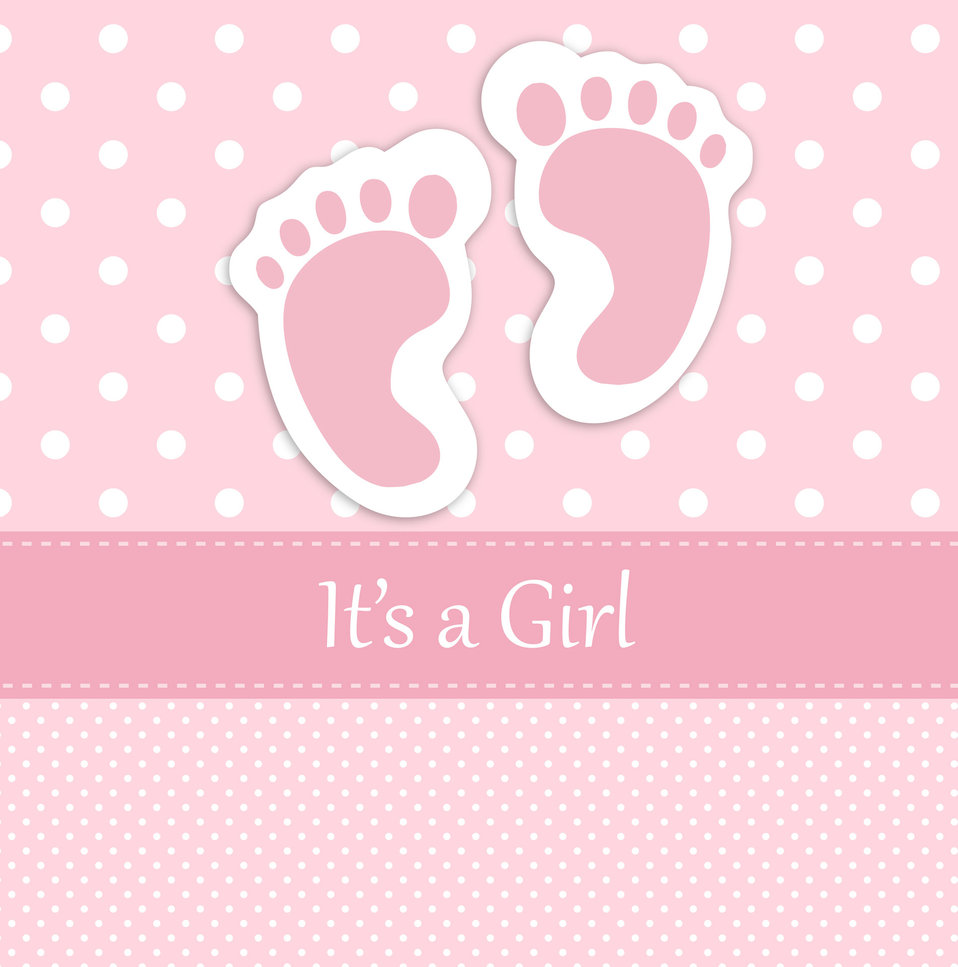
Baby girl footprints card

Pink polka dots baby girl footprints birth announcement card template for scrapbooking.